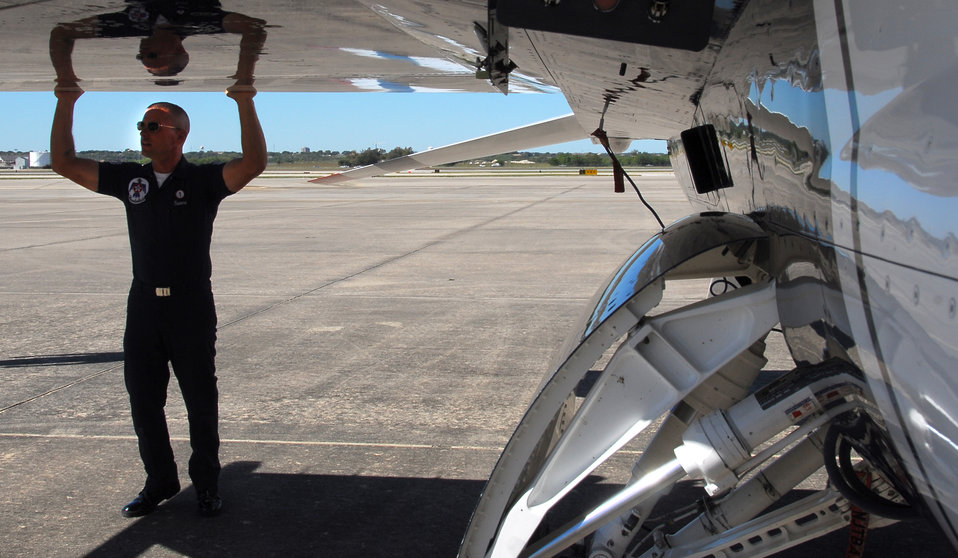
Thunderbirds maintainers keep show running behind the scenes

Staff Sgt. Nathan Kearns completes a pre-inspection on an Air Force Thunderbird F-16 Fighting Falcon Nov. 5, 2010, at Lackland Air Force Base, Texas. Sergeant Kearns is an Air Force Thunderbirds crew chief. The air demonstration team was at Lackland AFB to perform during AirFest 2010.